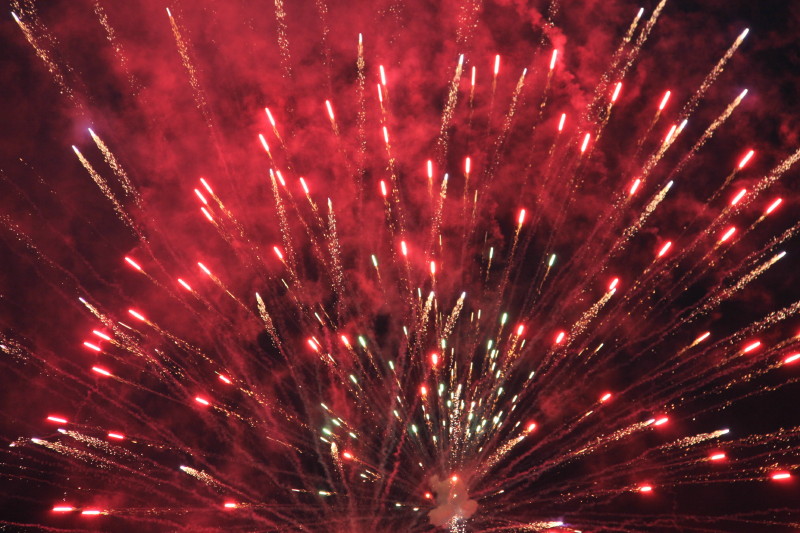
Fireworks light up the sky at the U.S. Embassy Caracas in Venezuela's U.S. Independence Day celebration on June 30, 2010.